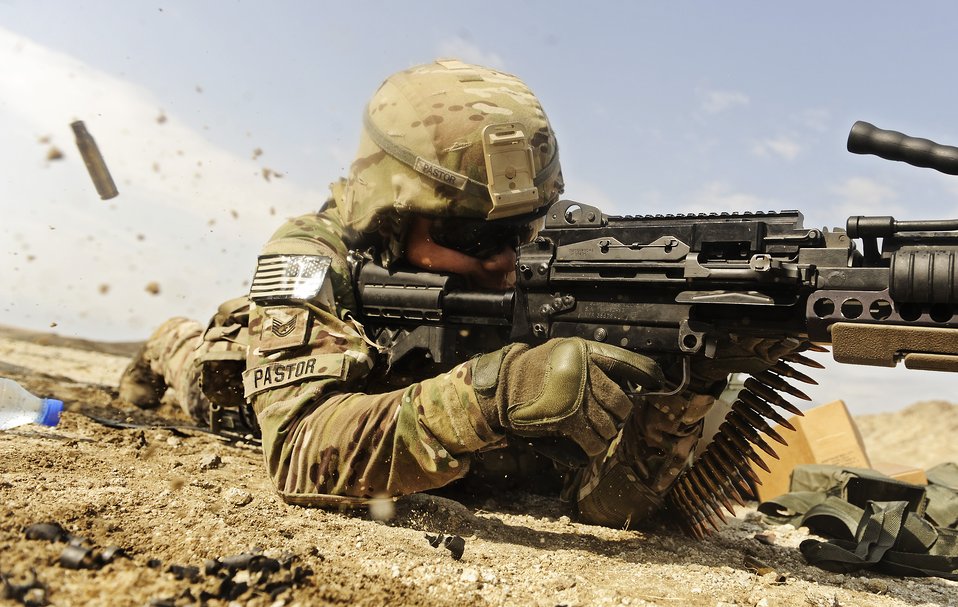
Laying down some fire

Tech. Sgt. Sam Pastor fires an Mk48 Sept. 10, 2011, at the off-base firing range near Forward Operating Base Mehtar Lam, Afghanistan. Pastor is a vehicle maintainer with the Laghman Provincial Reconstruction Team.